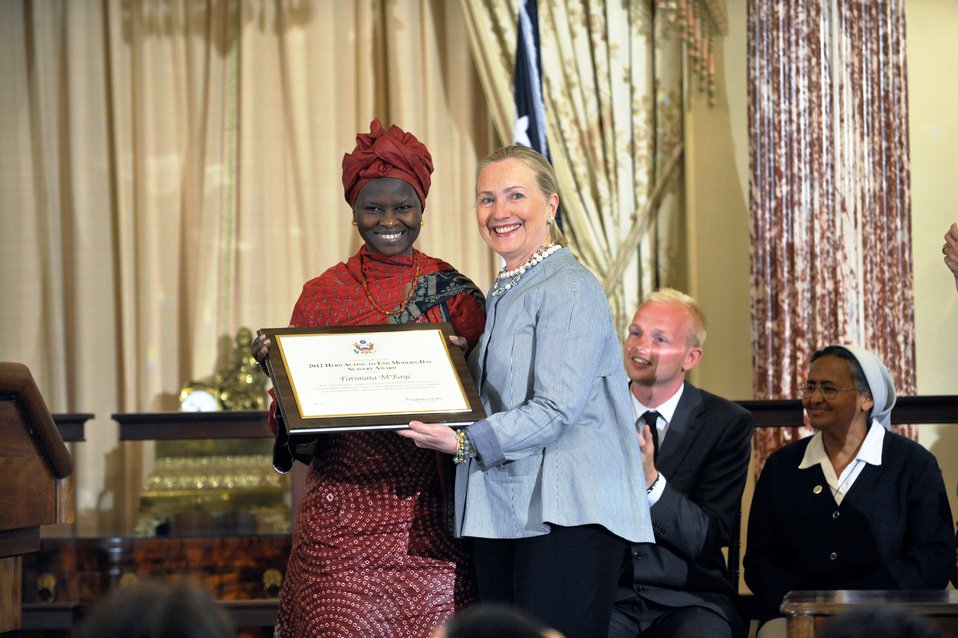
Secretary Clinton With TIP Hero Fatimata M’Baye

U.S. Secretary of State Hillary Rodham Clinton honors Fatimata M’Baye of Mauritania, a 2012 Trafficking in Persons (TIP) Report Hero, at the U.S. Department of State in Washington, D.C., on June 19, 2012.